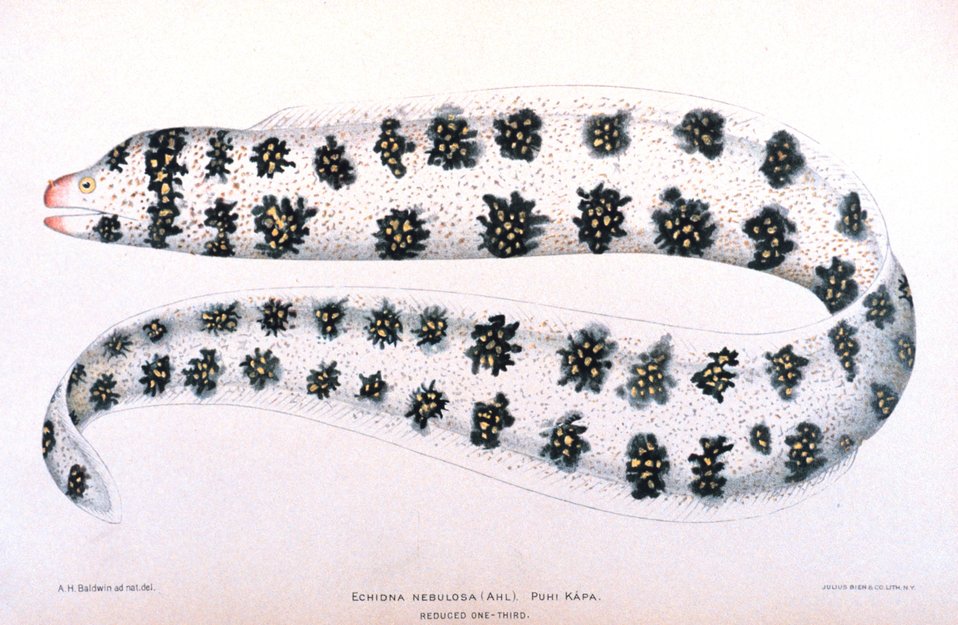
Echidna nebulosa (Ahl). Puhi kapa. In: 'The Shore Fishes of the Hawaiian Islands, with a General Account of the Fish Fauna', by David Starr Jordan and Barton Warren Evermann. Bulletin of the United States Fish Commission, Vol. XXIII, for 1903. Part I. P. 574, Plate I.